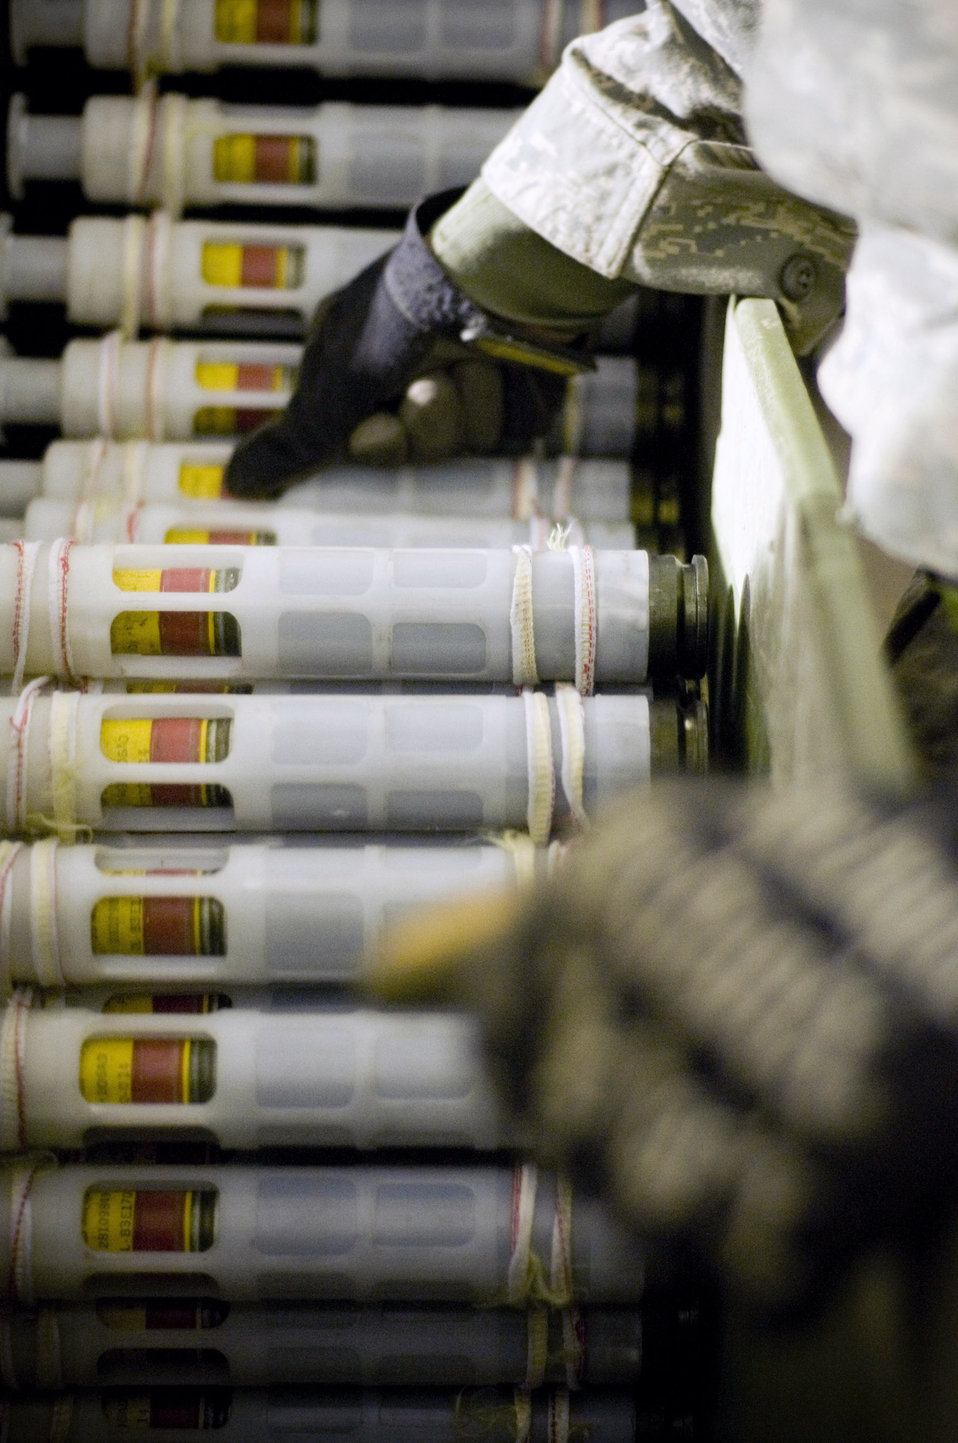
Feeding the Thunderbolt II

Airman 1st Class Jeb Snow guides PGU-13 high-explosive incendiary rounds into the GFU-7